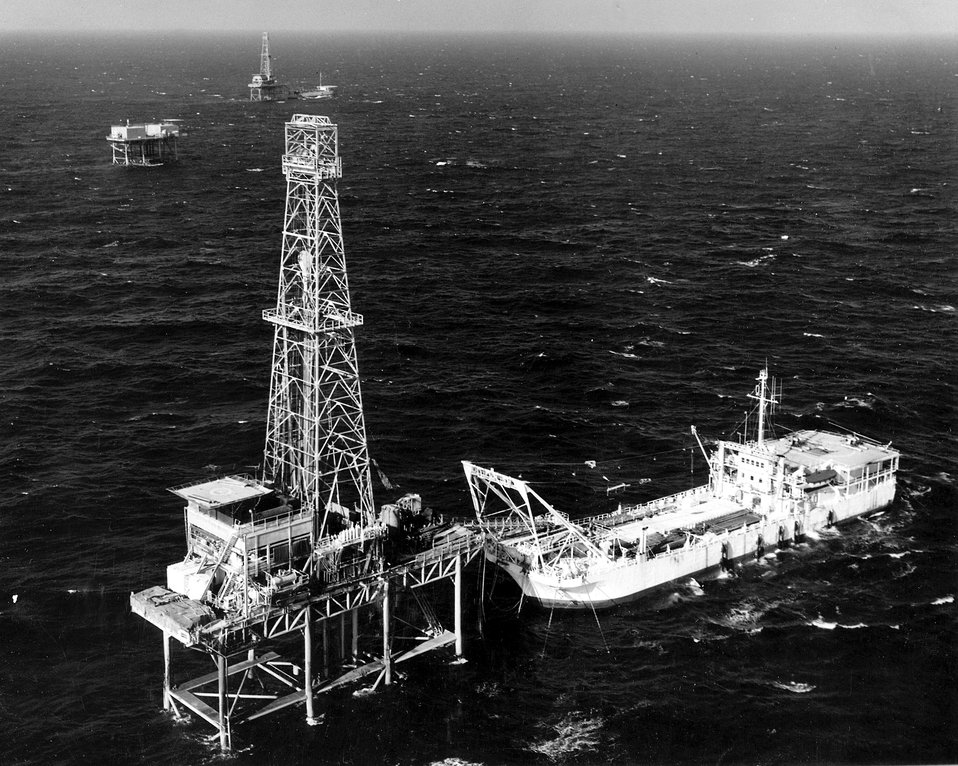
Tender-Patform Rig. Offshore, Louisiana. c. undated